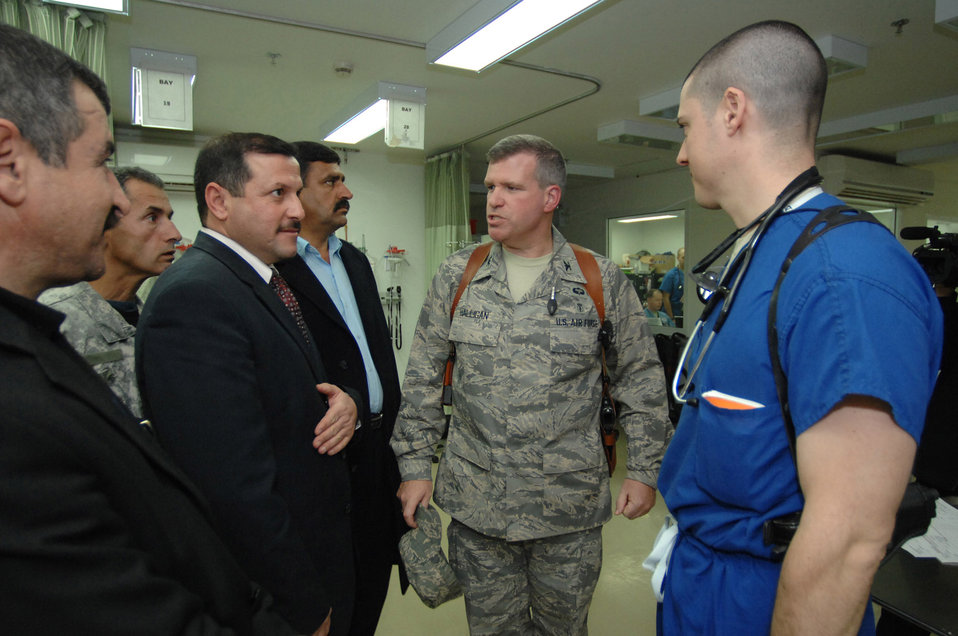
Iraqi leaders visit civilian IED victims at Air Force hospital

Leaders from the city of Balad, Iraq, meet with Maj. (Dr.) Paul DeFlorio (right) Feb. 11 at Balad Air Base, Iraq. The doctor oversaw the medical treatment of 20 Iraqi civilians who were transported to the hospital the day before by Army Soldiers after a vehicle-borne improvised explosive device was detonated near the city of Balad. The Iraqi leaders were taken to the bedsides of their injured countrymen by Col. Timothy Halligan, the 332nd Expeditionary Medical Group deputy commander (center). Major DeFlorio is the Air Force Theater Hospital emergency department officer in charge. Major DeFlorio and Colonel Halligan are deployed from Lackland Air Force Base, Texas.